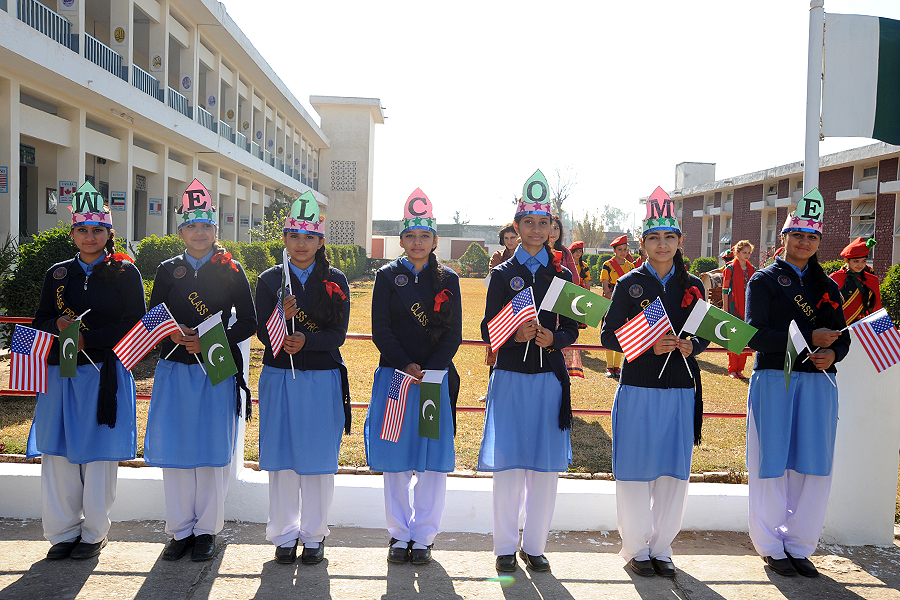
United States and Pakistan Launch the Pakistan Reading Project